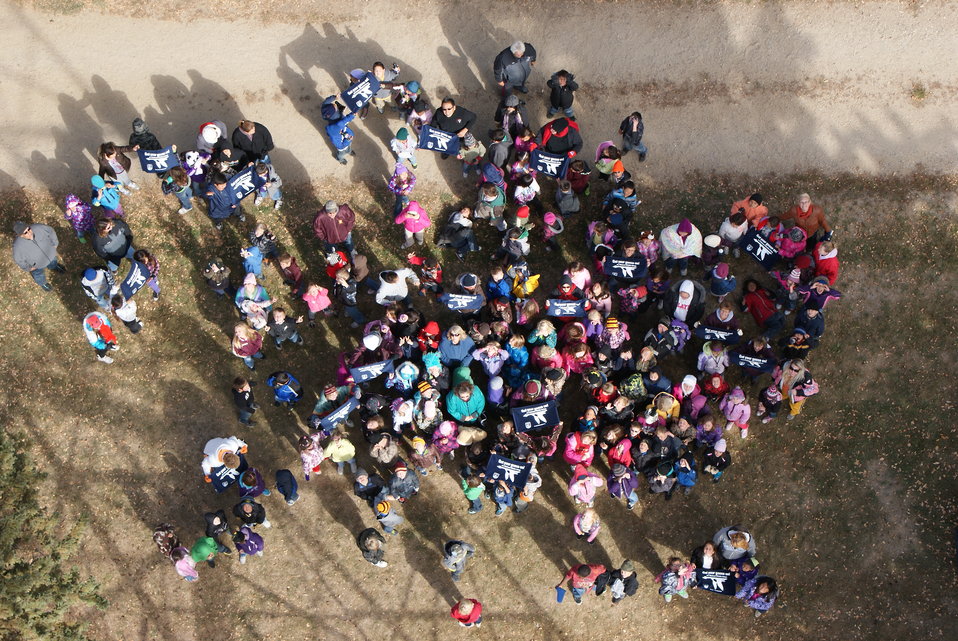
GYGO! Aerial Shot

Taken at South Dakota's Waubay National Wildlife Refuge.